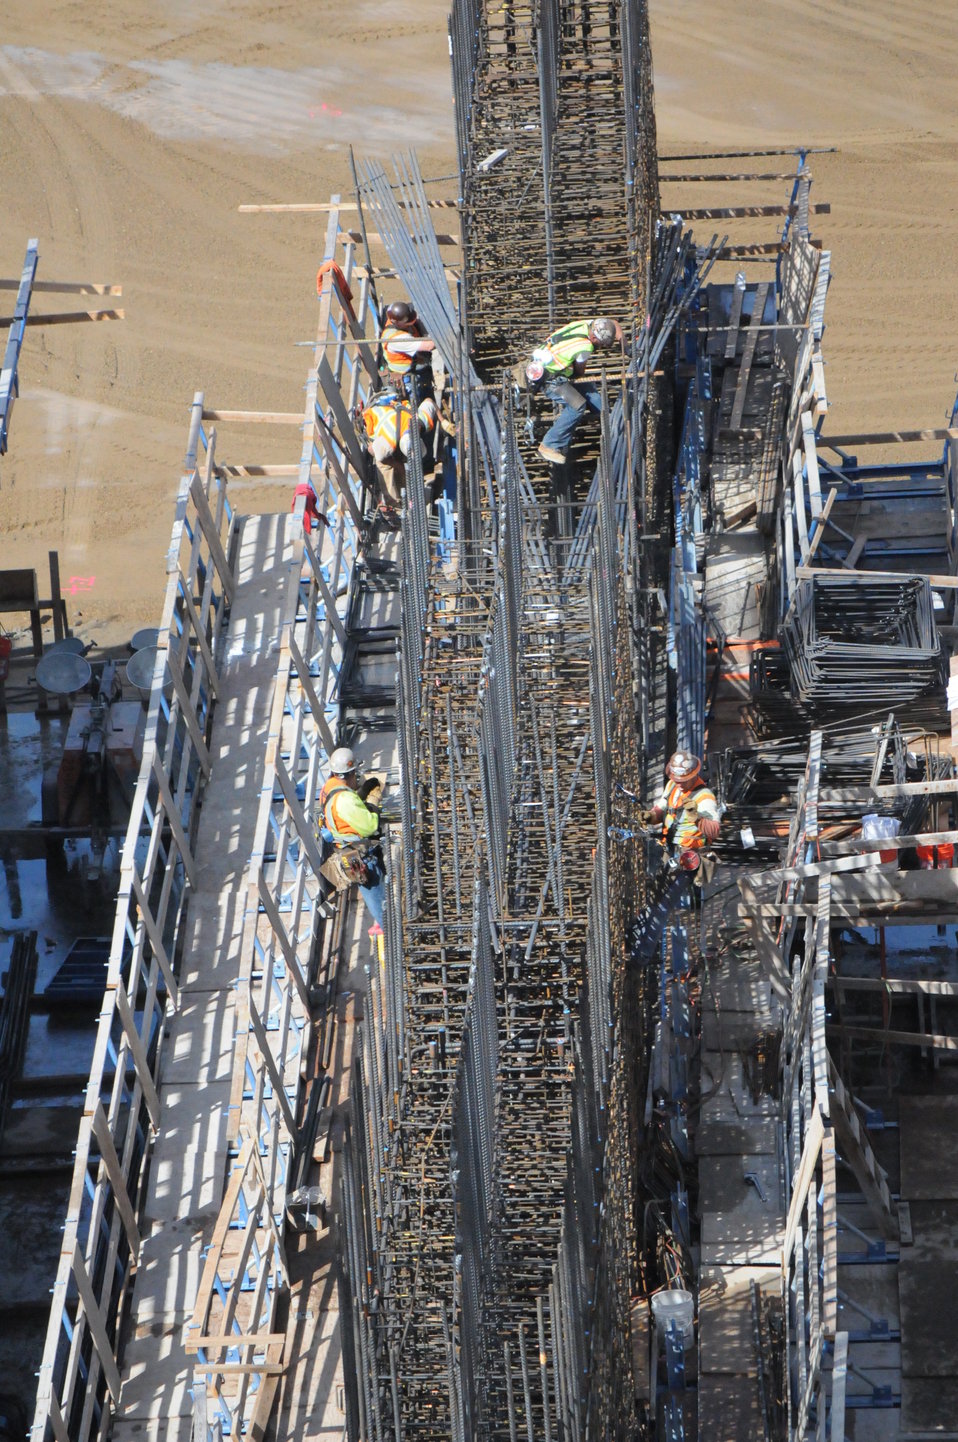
Placing Steel Rebar

Contractors working for the Sacramento District construct the support system for the rising Folsom Dam auxiliary spillway on March 14. The control structure—essentially a second dam—will stand as tall as the Statue of Liberty upon completion, estimated in October 2017, and will help reduce the risk of flooding in the Sacramento region.